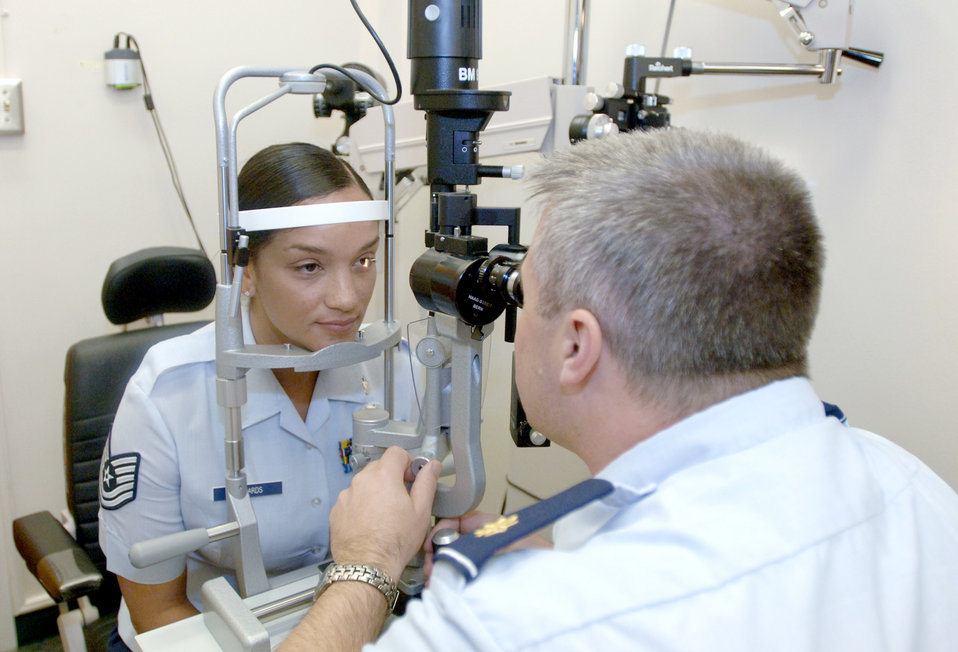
Cateracts

Maj. (Dr.) Michael Osterhoudt performs an eye exam on Tech. Sgt. Melkys Richards at the Langley AFB Optometry Clinic Aug. 23, 2010. August is Cataract Awareness Month, and Airmen are advised to protect their eyes against ultraviolet rays and see their optometrist normally to reduce the risk of cataract formation. Dr. Osterdout and Sergeant Richards are with the 633rd Aerospace Medicine Squadron.